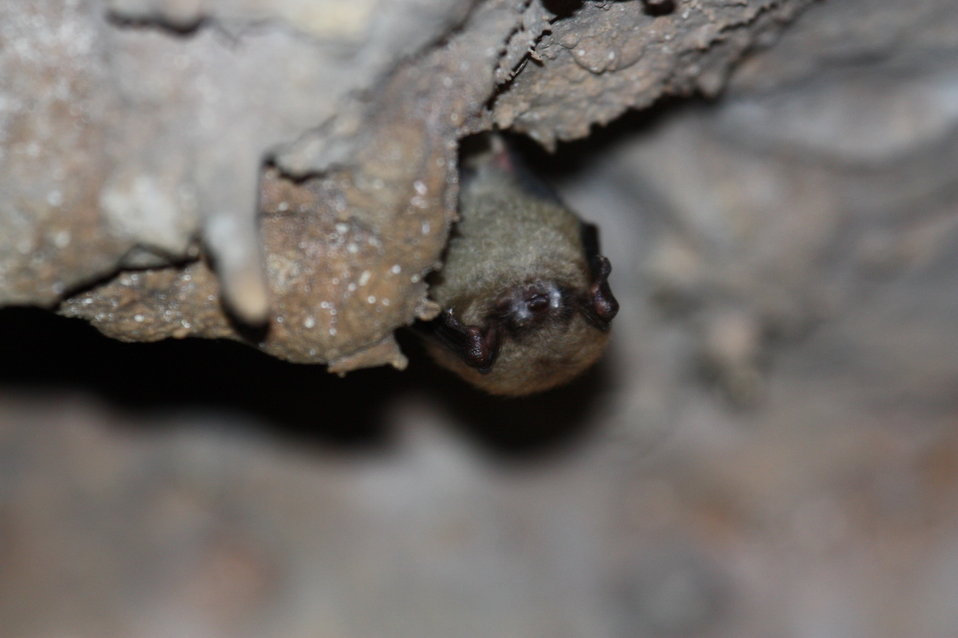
Little brown bat with visible fungus from Onondaga Cave

Little brown bat with visible fungus collected at Onondaga Cave